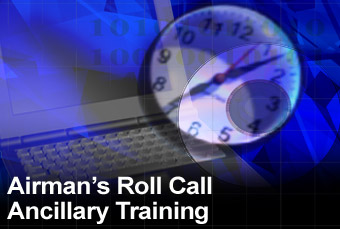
Airman's Roll Call

The newest Airman's Roll Call focuses on ancillary training.